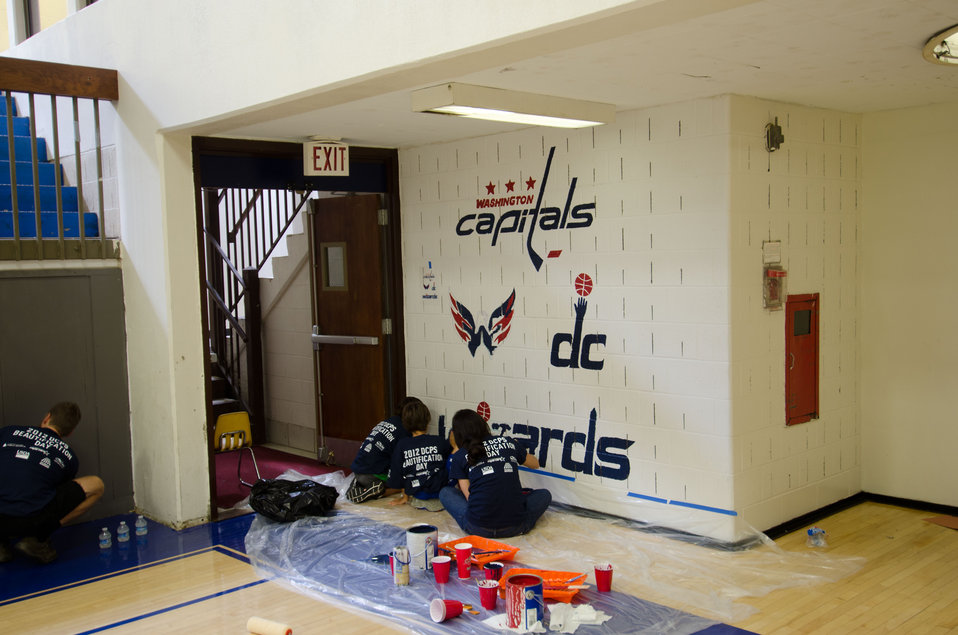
U.S. Department of Agriculture (USDA) People’s Garden Executive Master Gardeners, friends, and family, along with Washington Capitals fans are volunteering in District of Columbia Public Schools’ (DCPS) Beautification Day, on Saturday, August 25, 2012, at Thurgood Marshall Elementary School, in Washington, D.C. Each year people are invited to help “spruce up” public school facilities in preparation for the first day of school. More than 70 volunteers pitched in at this large school facility. The People’s Garden effort involves building and painting raised planter boxes, then preparing the soil mixture so they are “ready to grow.” Additionally, a team that includes descendants of U.S. Supreme Court Justice Thurgood Marshall assembles a prefabricated garden toolshed. The Justice’s son, John Marshall leads the team, which includes Brianna the Justice’s great-grand daughter in one of many multi-generational efforts at this school today. Washington Capitals Forward Mike Riberio, his family and mascot Slapshot participated in every project underway at Marshall School. From the outside gardens, to inside mural painting, and robotics worktable construction, the teams made their goals.